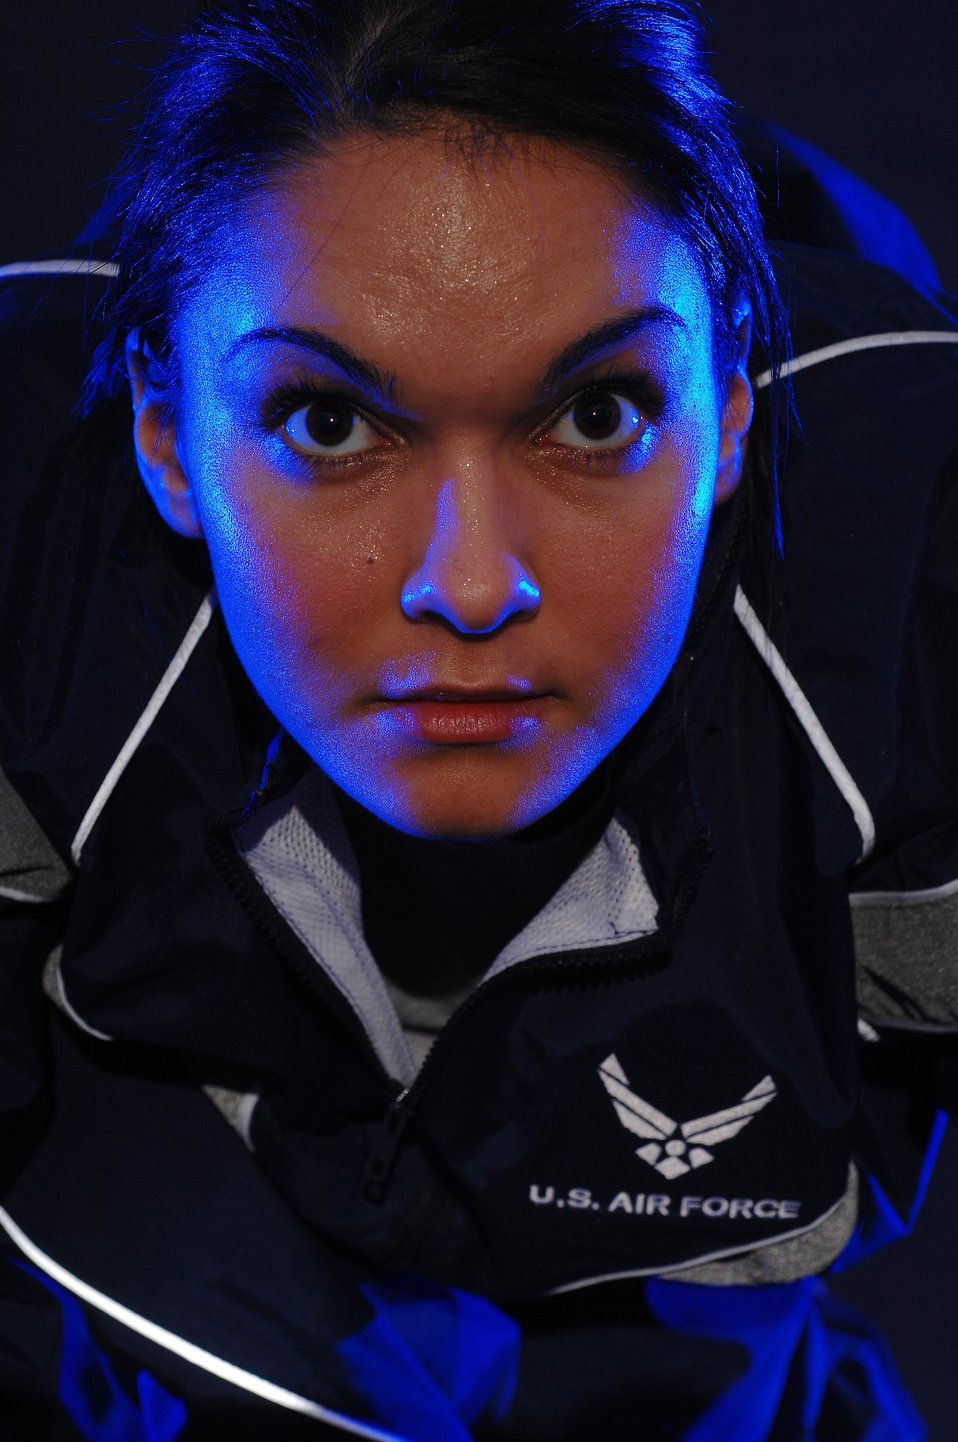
Hold that pose

Airman 1st Class Savannah Orozco is photographed in her physical training uniform for a fitness poster Jan. 5 in the multimedia studio at McChord Air Force Base, Wash. Airman Orozco is with the 62nd Operations Support Squadron there.